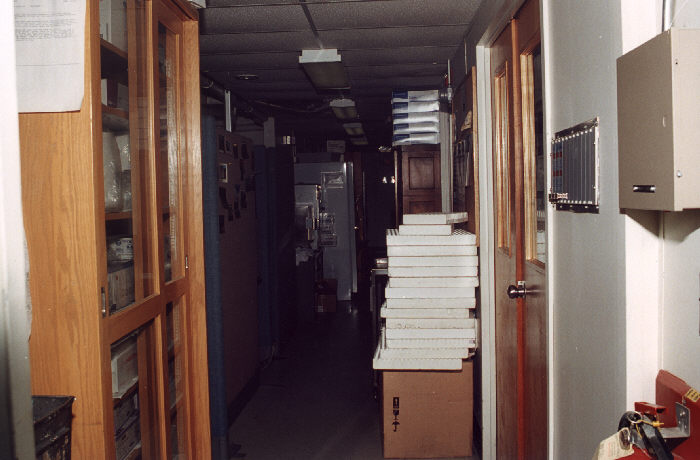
Lab Scene, Building 17, Chamblee, CDC